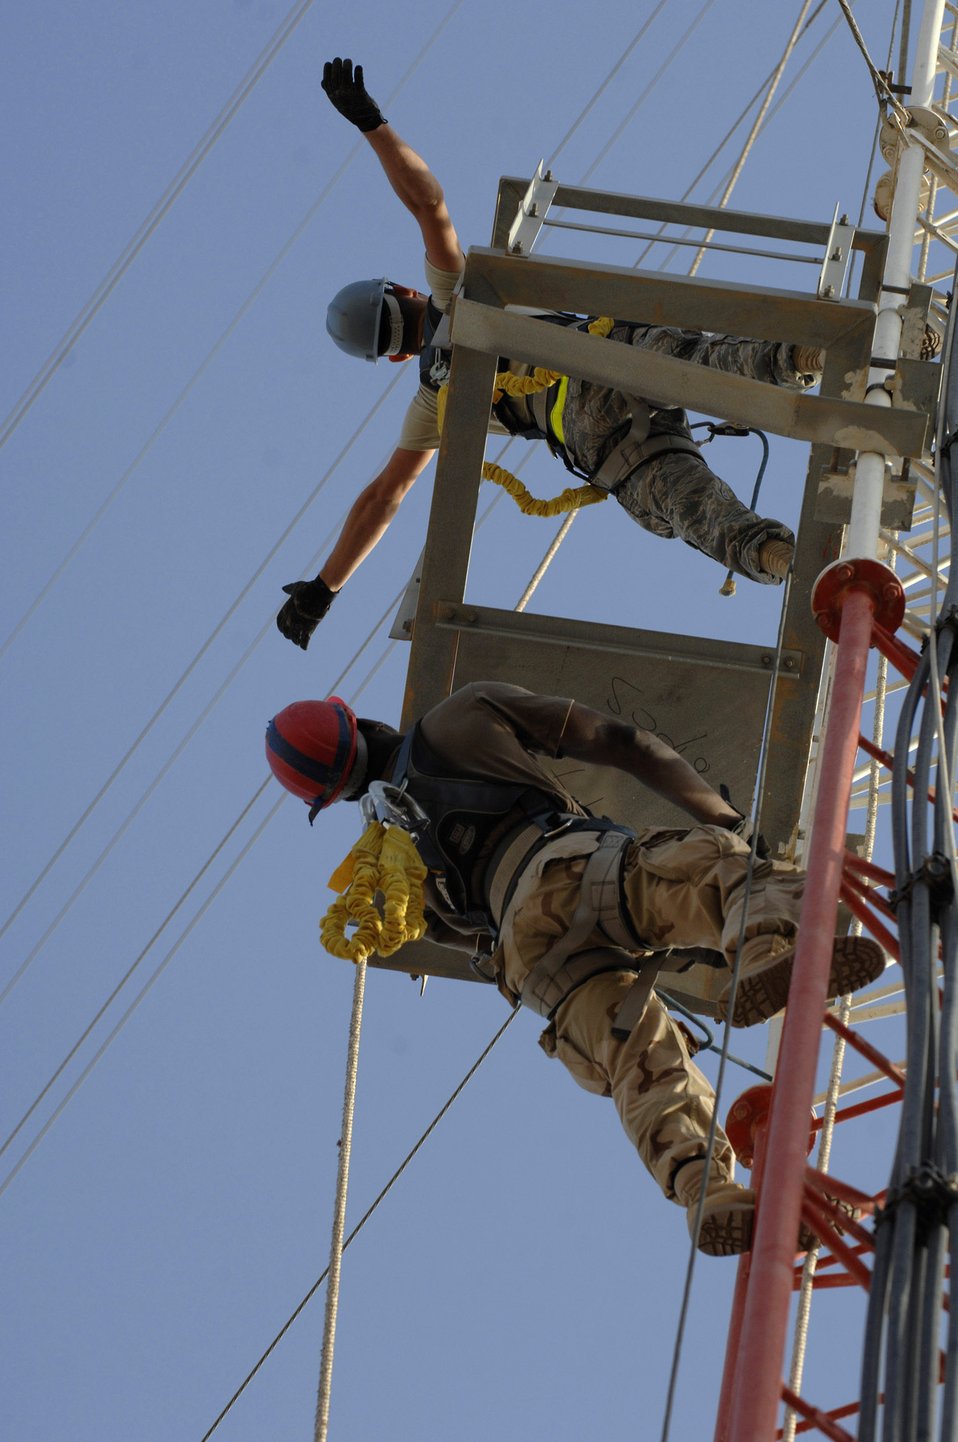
Tower-climbing certification

From 50 feet above the ground on the Radio-over-Internet Protocol Routed network tower at Ali Base, Iraq, Airman 1st Class William Klemmer leans back to test his safety harness as part of a climbing-certification process Nov. 26 as Senior Airman Lakendrick Fisher observes. Airmen from the 407th Expeditionary Communications Squadron took an opportunity to get tower-climbing certifications when a team arrived to do preventive maintenance on the RIPRnet. Airman Klemmer is deployed from F.E. Warren Air Force Base, Wyo., and Airman Fisher is deployed from Yokota Air Base, Japan.